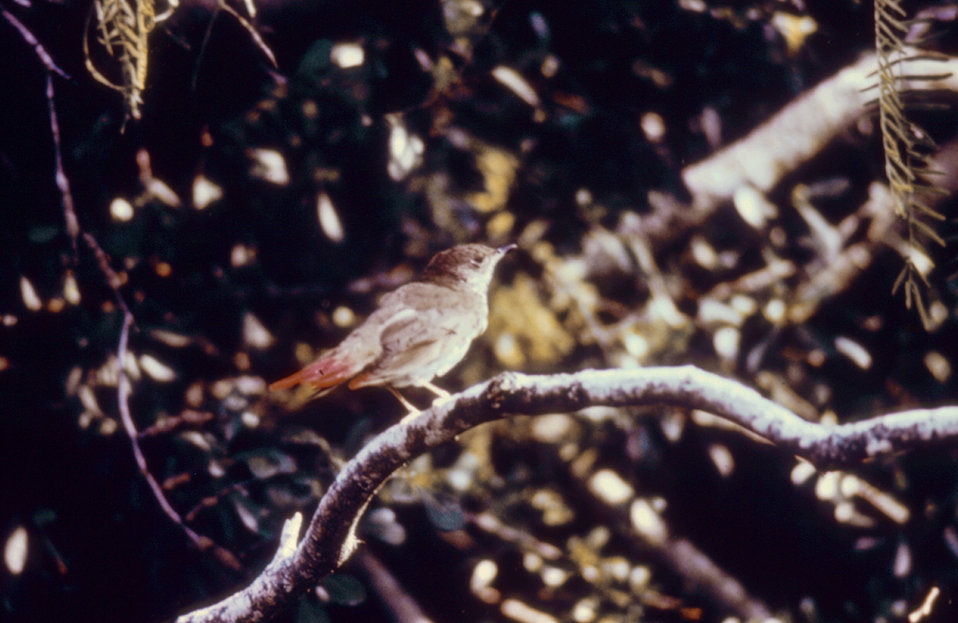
This bird's tail was marked with red paint for purposes of short-term spotting during an arbovirus field study.